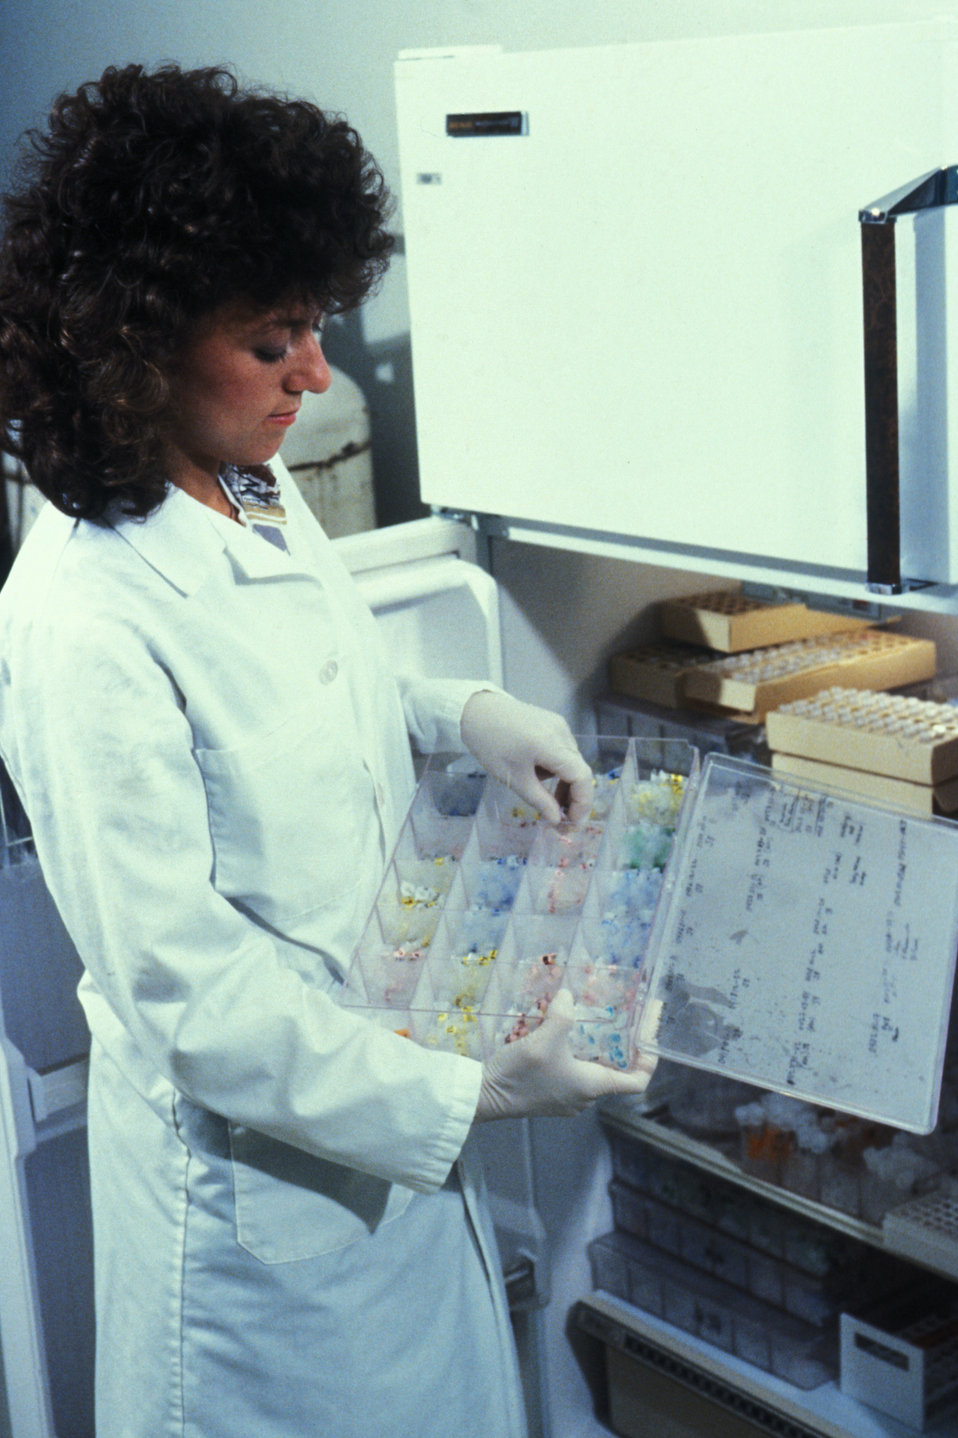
Here a CDC lab technician is working on AIDS research.